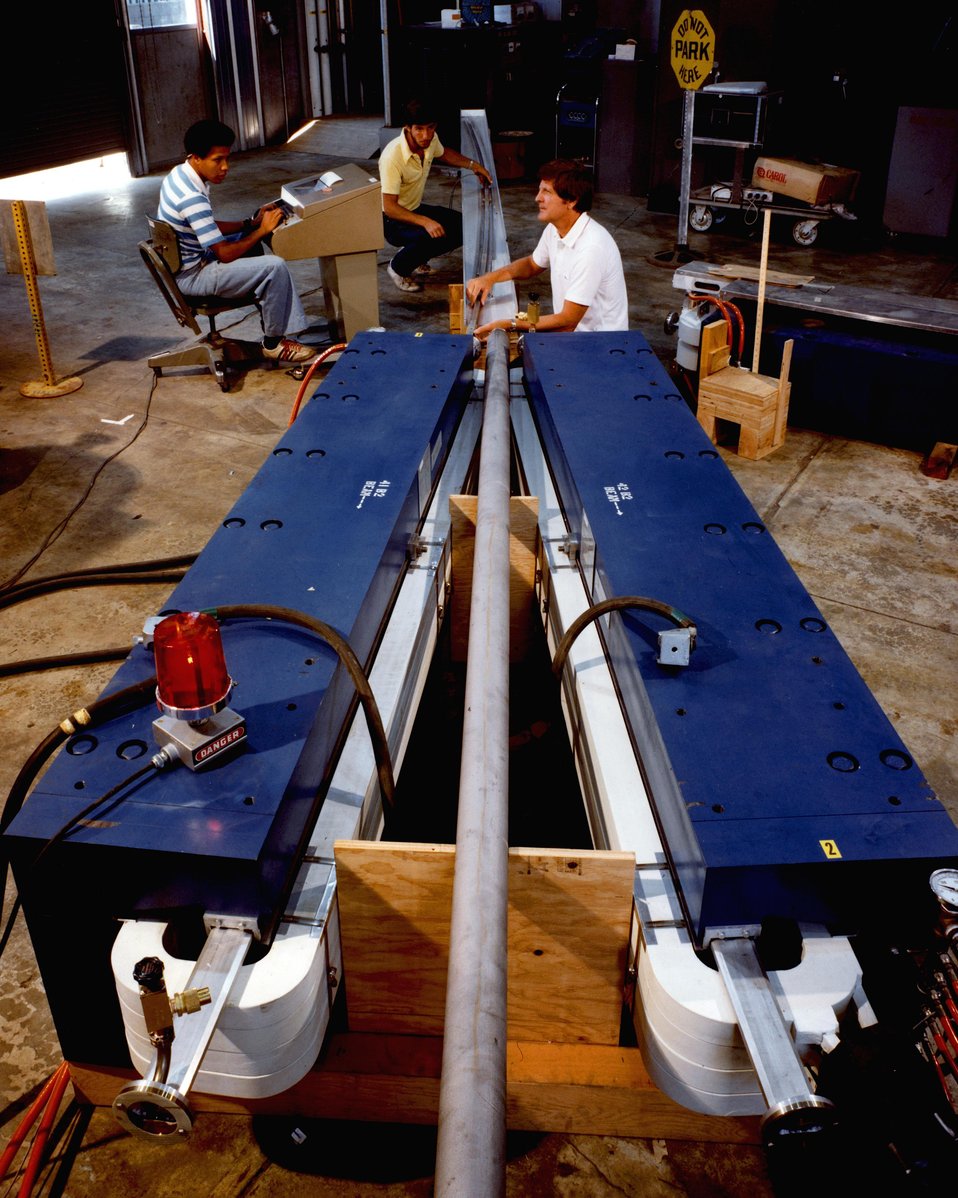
MAGNETIC MEASUREMENTS OF THE PEP BEAM TRANSPORT LINE.

THE POSITRON-ELECTRON PROJECT (PEP) IS A JOINT UNDERTAKING OF STANFORD LINEAR ACCELERATOR CENTER (SLAC) AND THE LAWRENCE BERKELEY LABORATORY (LBL). THE PEP MACHINE IS DESIGNED TO STORE BEAMS OF ELECTRONS AND POSITRONS CIRCULATING IN OPPOSITE DIRECTIONS AT SINGLE-BEAM ENERGIES BETWEEN 4 GEV AND 18 GEV. THE SOURCE OF THE BEAMS WILL BE THE PRESENT SLAC ACCELERATOR. THE COUNTER-ROTATING BEAMS OF ELECTRONS AND POSITRONS WILL COLLIDE WITH EACH OTHER AT SIX POINTS IN THE MACHINE. THESE COLLISION OR BEAM-INTERACTION POINTS WILL BE USED FOR HIGH-ENERGY PHYSICS EXPERIMENTS.